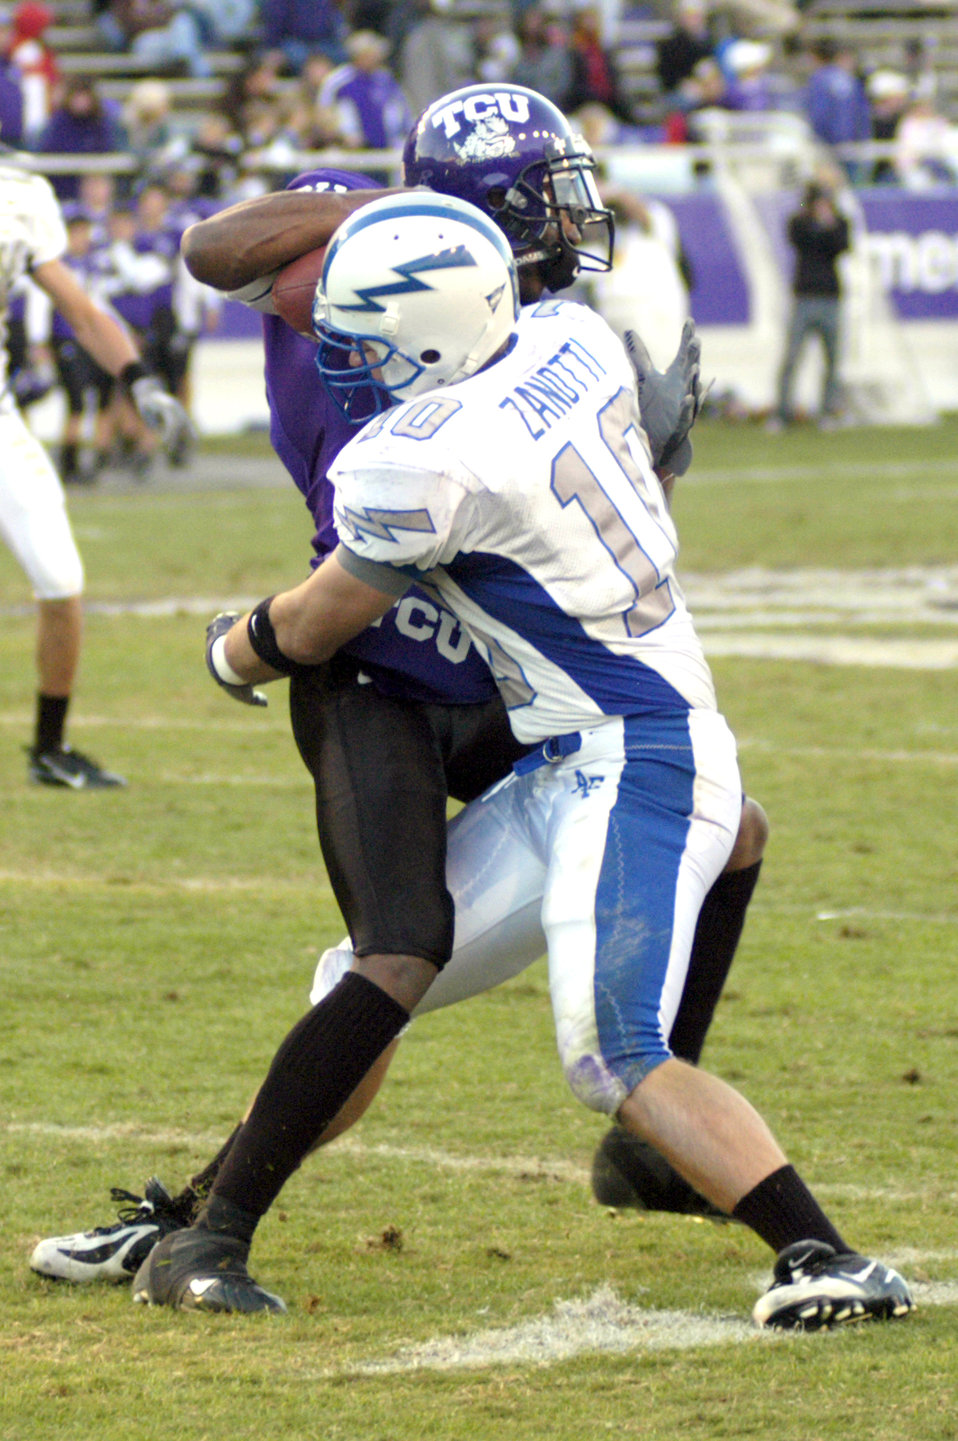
TCU grounds Air Force in season finale

Air Force senior Adam Zanotti wraps up a Texas Christian University runner during the Horned Frogs 38-14 victory over the Falcons Dec. 2 in Fort Worth, Texas.